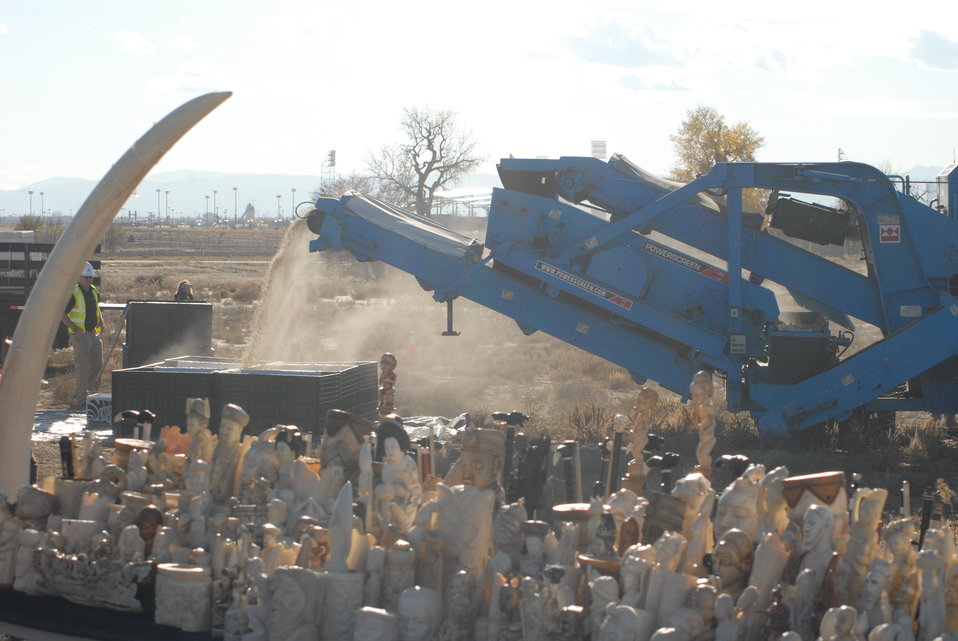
The crusher in action as it pulverizes the ivory